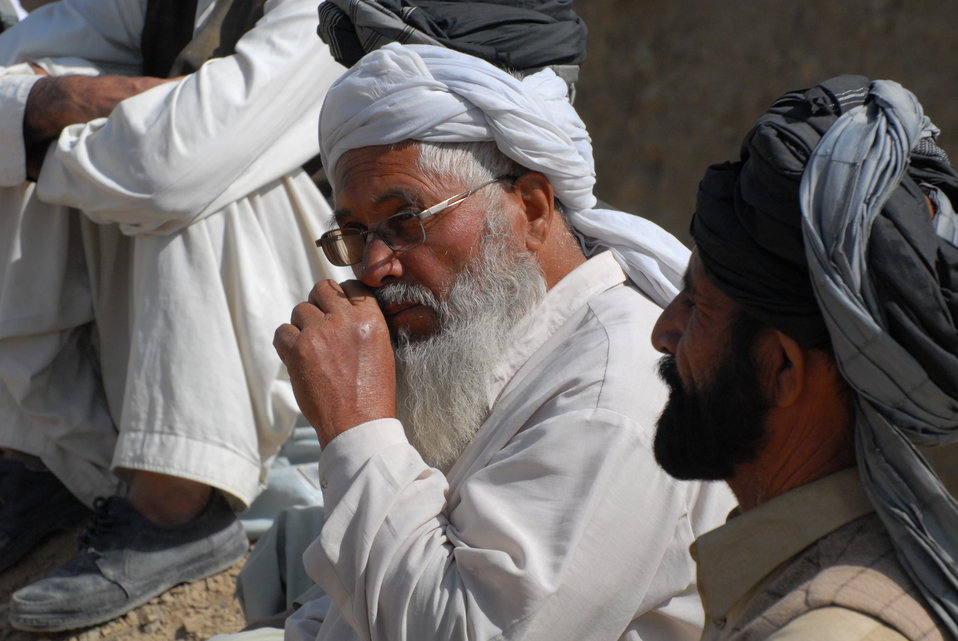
'On the Road' in Paktya Province